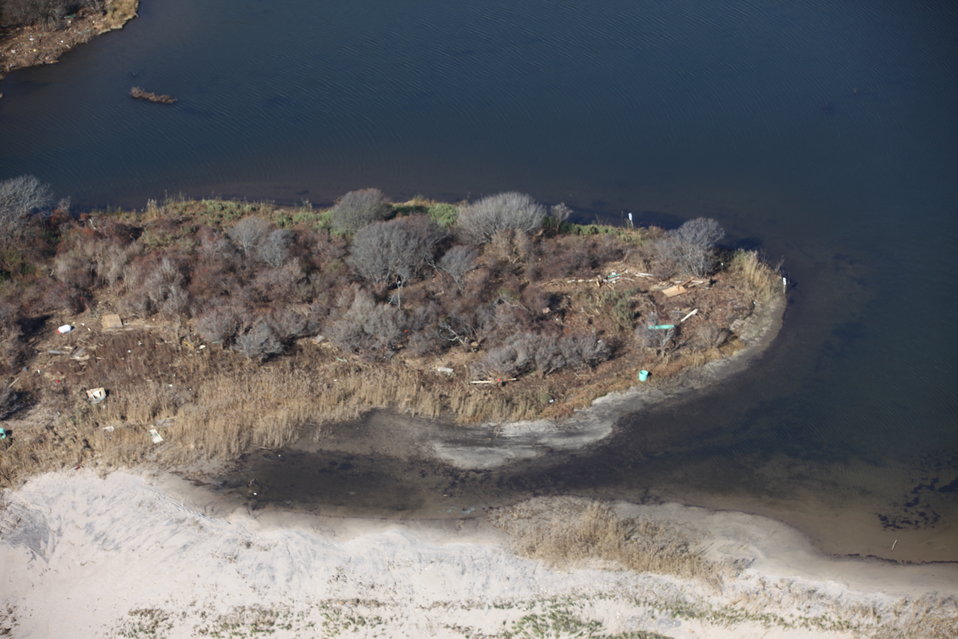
Debris on Moonstone Beach (RI)

Debris on Moonstone Beach at Trustom Pond NWR deposited by storm Sandy.